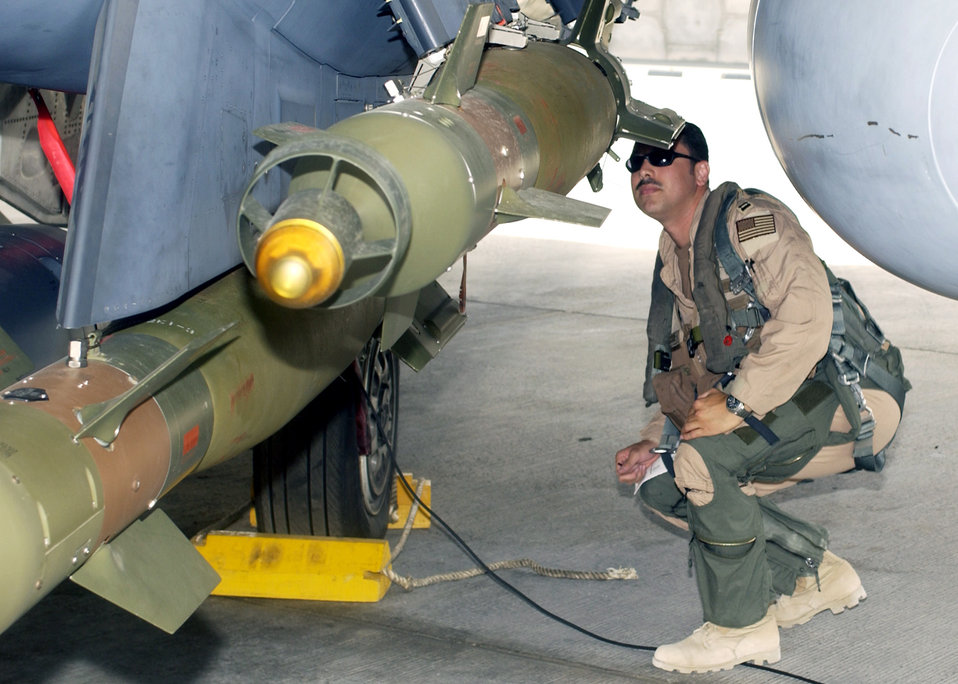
Preparing to strike

SOUTHWEST ASIA -- Capt. Mark Olguin inspects an F-15E Strike Eagle at a forward-deployed location before a mission. Captain Olguin is deployed from the 492nd Fighter Squadron at Royal Air Force Lakenheath, England.